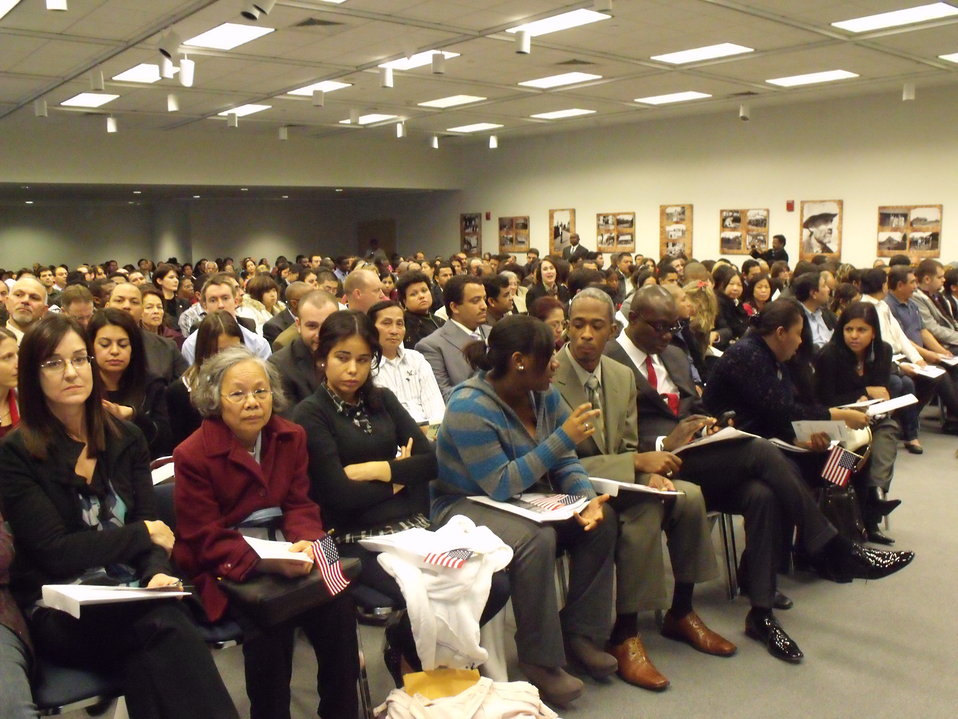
Naturalization Ceremony